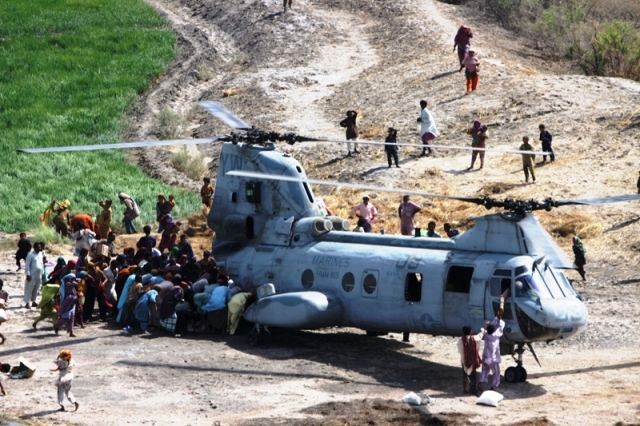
A U.S. Military Helicopter Delivers Relief Supplies to Pakistanis in the Sindh Province

A U.S. military CH-46 helicopter delivers relief supplies to Pakistanis affected by flooding at Pano Aqil Air Base in the Sindh province of southern Pakistan on September 20, 2010.